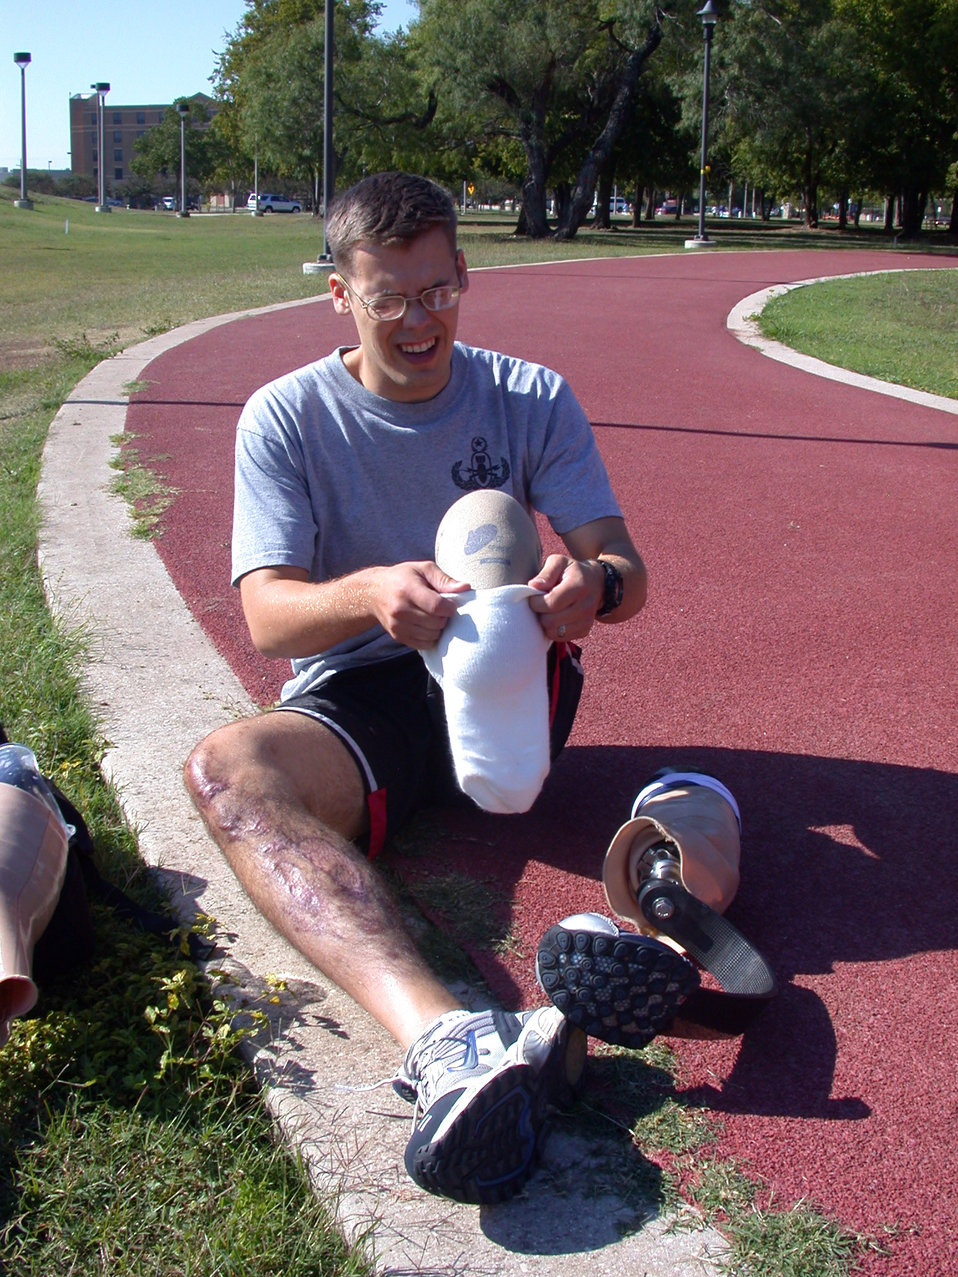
Mine explosion puts two Airmen on different paths to recovery

Staff Sgt. Chris Ramakka prepares to go for a jog. He has a prosthetic for walking and one for running.